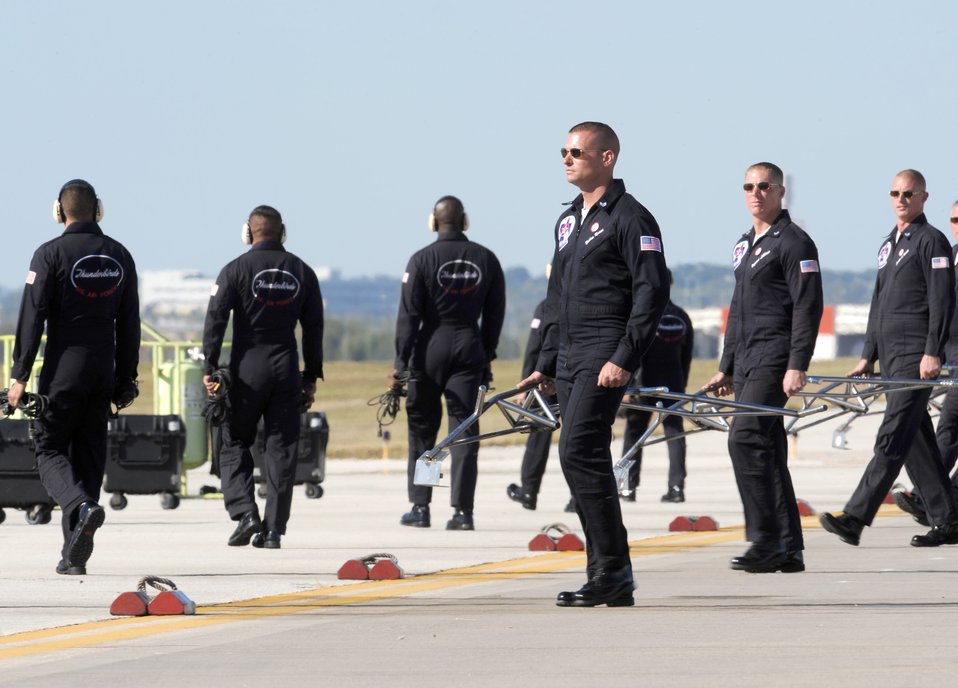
Thunderbirds at Lackland

The 2010 Thunderbird crew chiefs perform their ground show during AirFest 2010 air show Nov. 7, 2010, at Lackland Air Force Base, Texas.